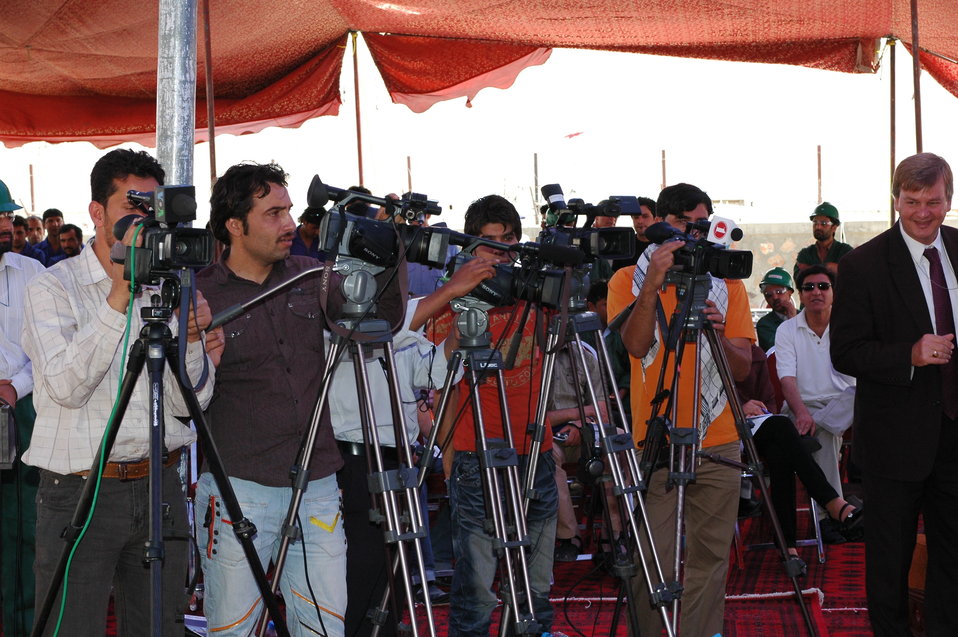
105 MW Tarakhil Power Plant Handover